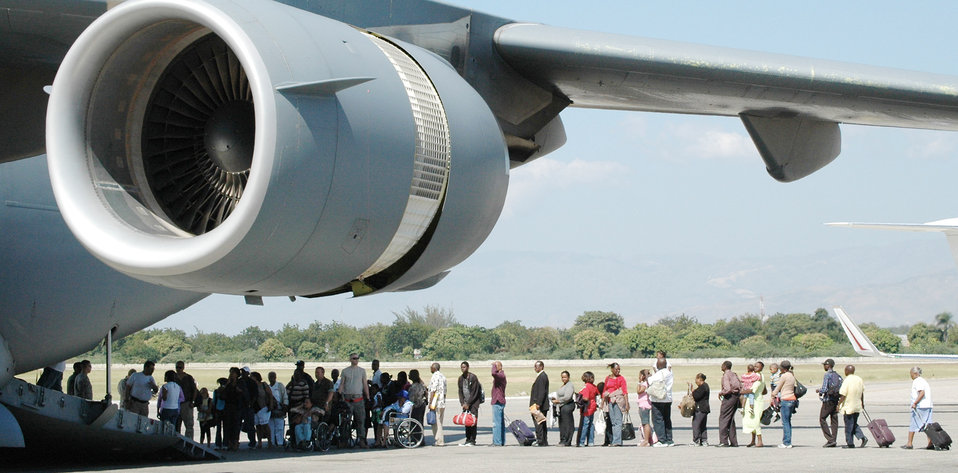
Airman sees Haiti scene unfold from under the brim of many hats

Airmen assigned to the 621st Contingency Response Wing from Joint Base McGuire-Dix-Lakehurst, N.J., assist in the loading of evacuees at Toussaint L'Ouverture International Airport Jan. 23, 2010, in Port-au-Prince, Haiti. Airmen responded in the aftermath of a 7.0 magnitude earthquake that crumbled most of the surrounding area, killing hundreds of thousands and displacing millions from their homes.